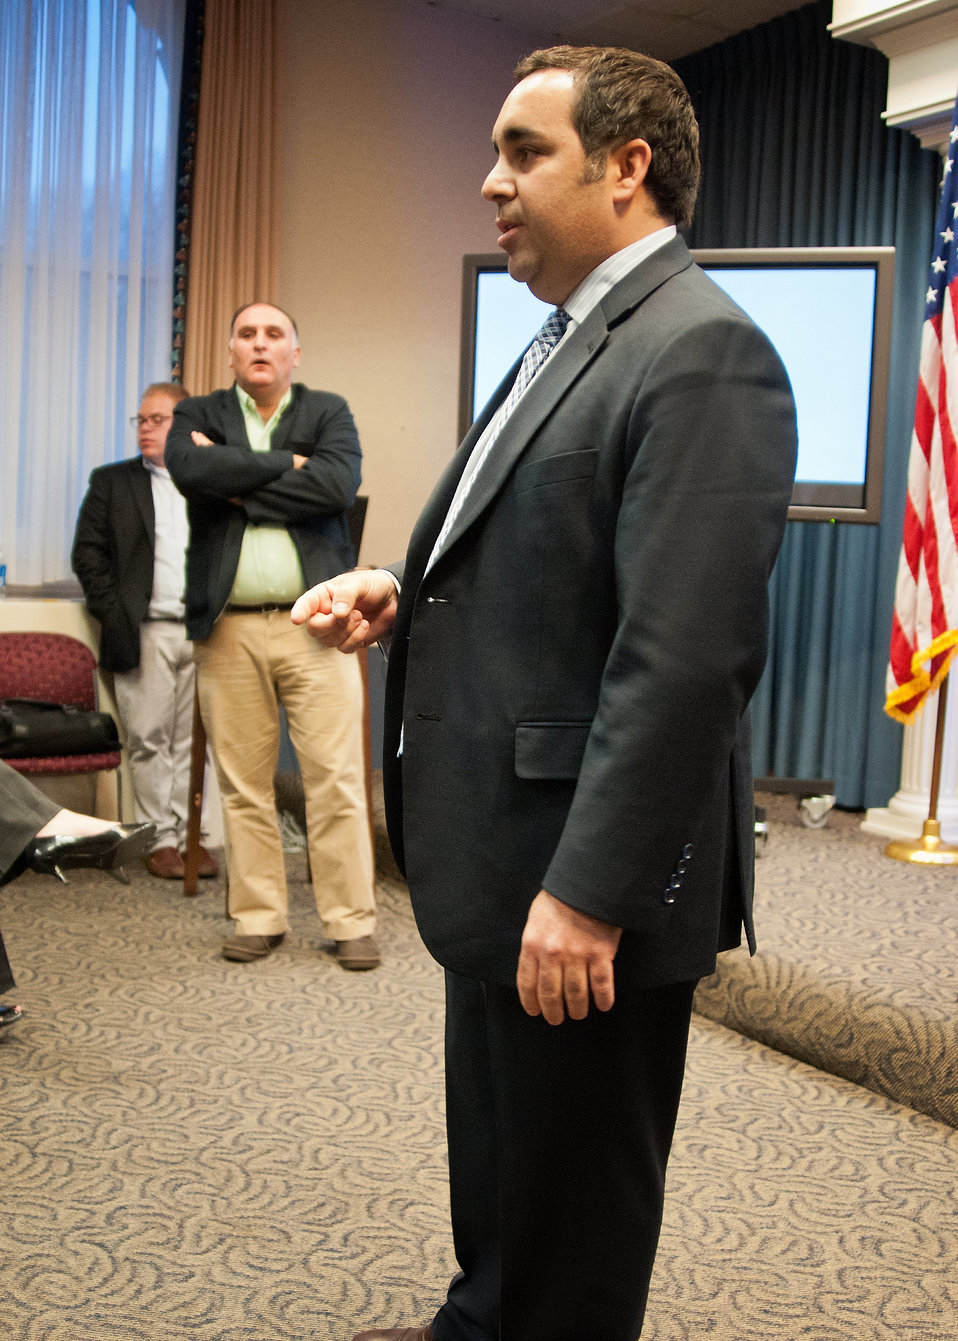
Max Holtzman, Senior Policy Advisor introduced Chef Jose Andres, Chef/Owner, Think Food Group the guest speaker at the kick-off meeting of the United States Department of Agriculture White House Liaison Weekly Political Appointee Meeting for the New Year in Washington, DC, Thursday, January 20, 2012. Chef Andres discussed creativity and how it can contribute to food policy.